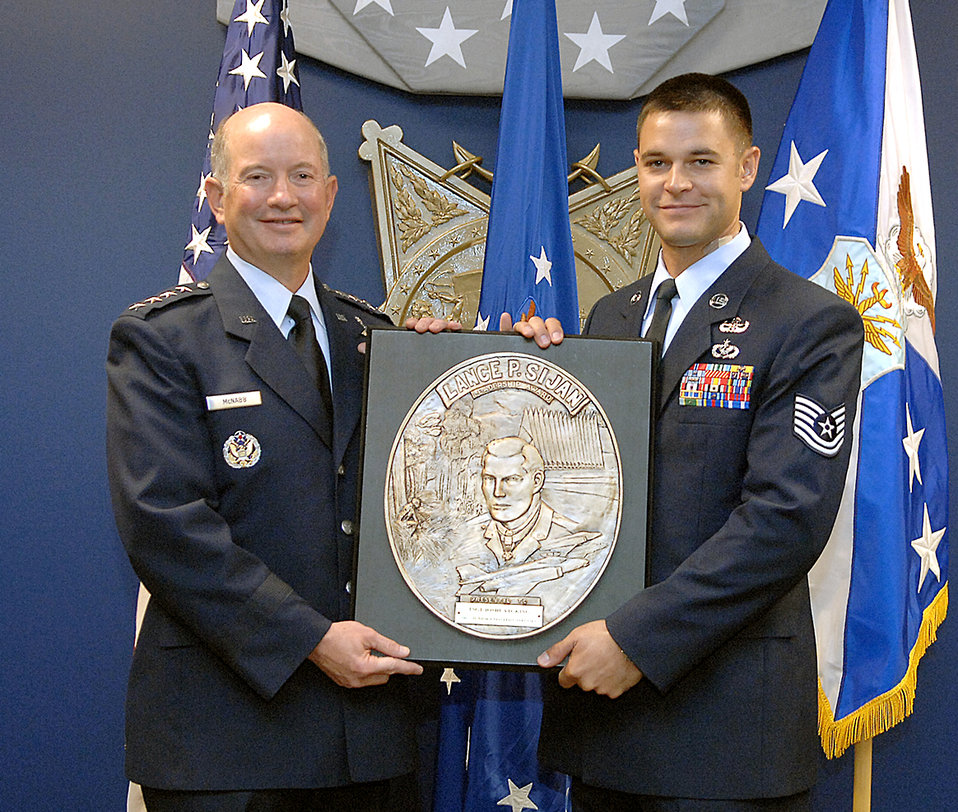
Airmen receive Sijan leadership award

Vice Chief of Staff of the Air Force Gen. Duncan J. McNabb presents the Lance P. Sijan Air Force Leadership Award to Tech. Sgt. Joshua D. King in a ceremony Aug. 20 at the Pentagon. Sergeant King is an explosive ordnance disposal team leader with the 366th Civil Engineer Squadron at Mountain Home Air Force Base, Idaho. The Sijan Award recognizes Airmen who demonstrated outstanding leadership while assigned to an organization at the wing level or below.